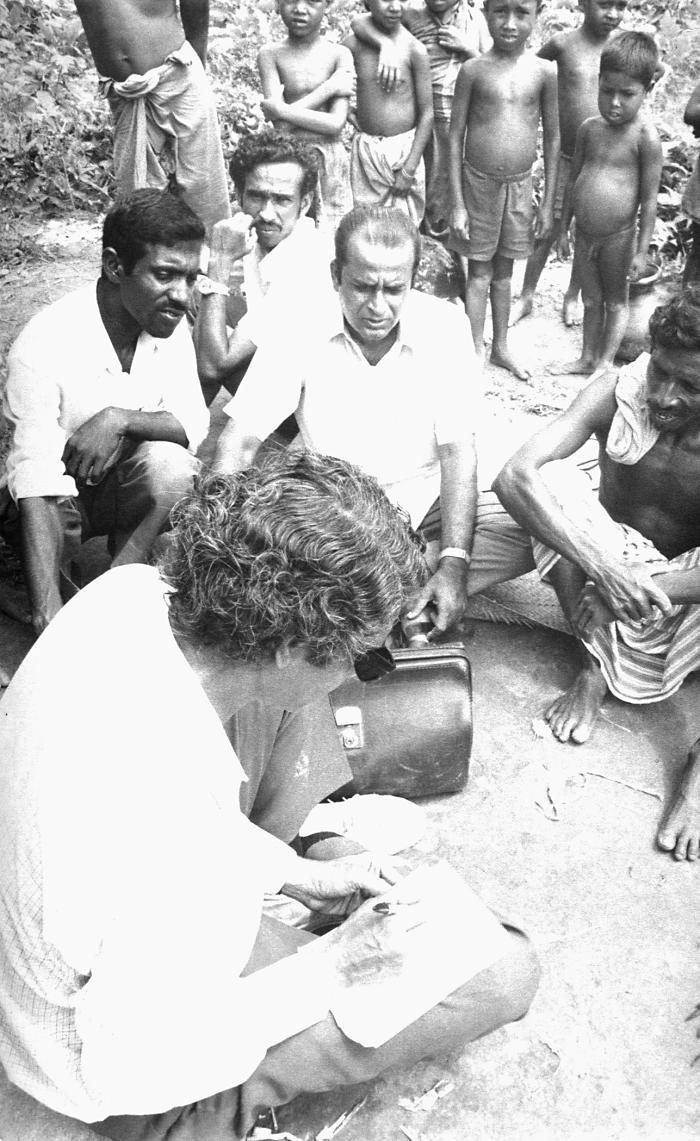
This image depicted World Health Organization (WHO) epidemiologist Dr. Hari Mehta, along with other eradication team members as they were checking over collected field data.Some of the team members seated with Dr. Mehta were local village residents who'd volunteered to help in the eradication efforts. Local residents, who became resident vaccinators, data collectors, and information announcers, played a profound role in achieving a successful outcome to the eradication program. As locals, they were viewed as familiar, and trusted, and spoke the local dialect, thereby, facilitating enhanced communication with fellow inhabitants.